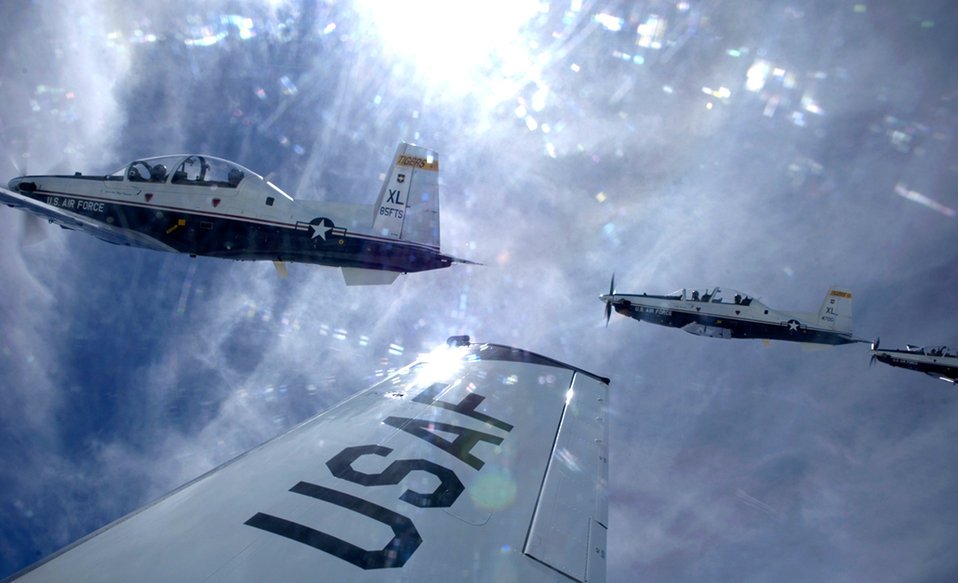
Climbing high into the sun

T-6A Texan IIs fly over Texas June 7. The aircraft and pilots are from Laughlin Air Force Base, Texas.